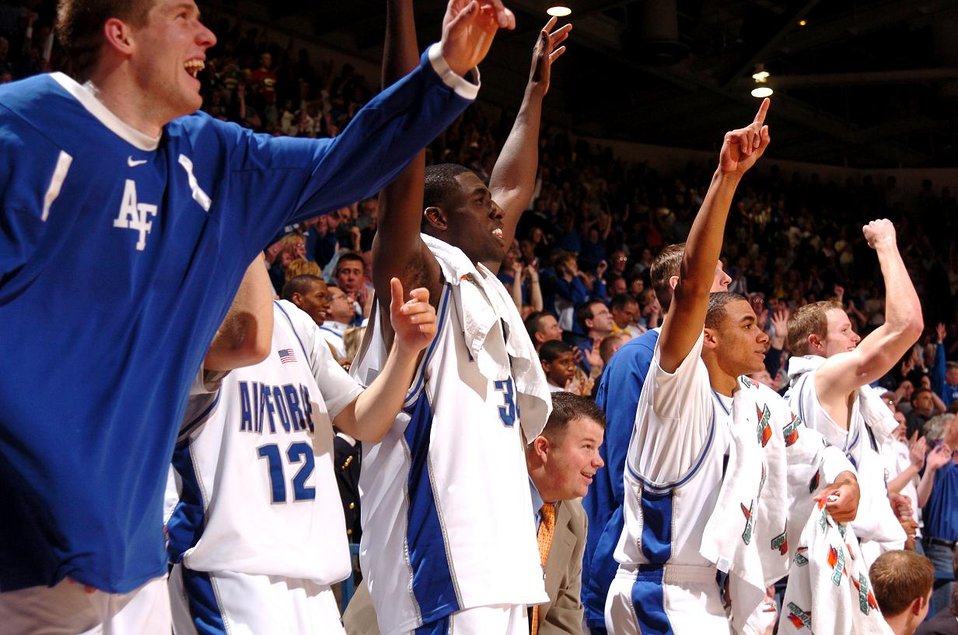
Falcon forwards march over Georgia in NIT

The Falcon starters stand up and cheer as their second string players increase their lead over Georgia late in their second round game of the National Invitation Tournament March 19 at the Air Force Academy's Clune Arena. Air Force went on to win, 83-52. The win over Georgia was Air Force's 25th of the season, a new school record.